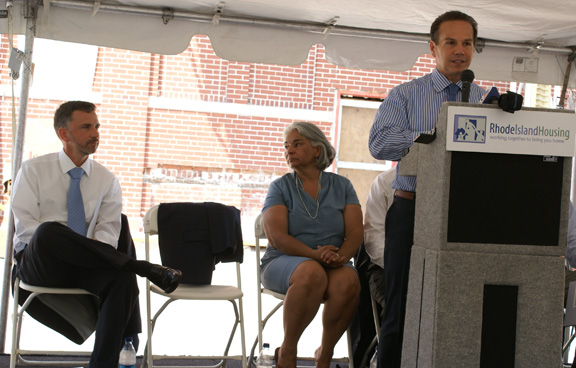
RI Ground Breaking 6/28/10

Providence Mayor David N. Cicilline spoke before the ground breaking of this first-of-its-kind housing development in Rhode Island.